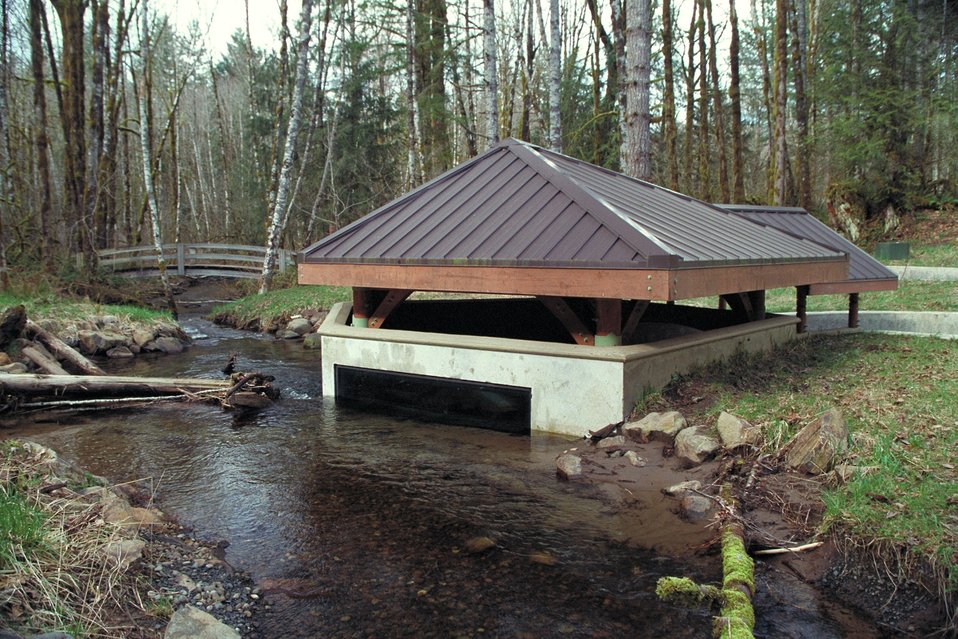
Cascade Stream Watch is an environmental education program conducted at BLM's Wildwood Recreation site.